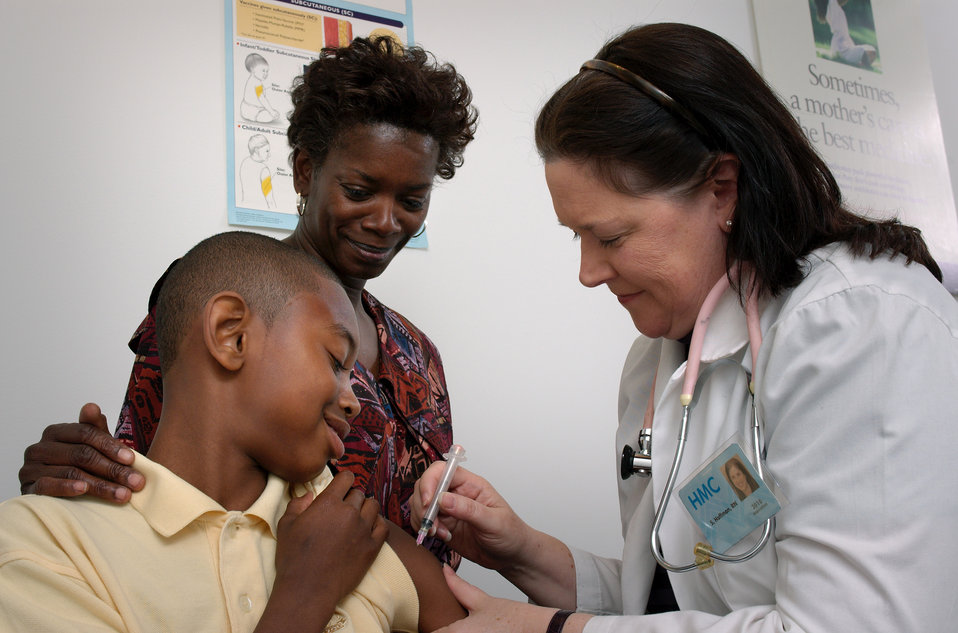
The nurse in this 2006 image was in the process of administering an intramuscular injection into the left shoulder muscle of this 13-year old boy as his mother looked on. He was assisting in the injection by holding up his shirt sleeve in order to expose the immunization site.